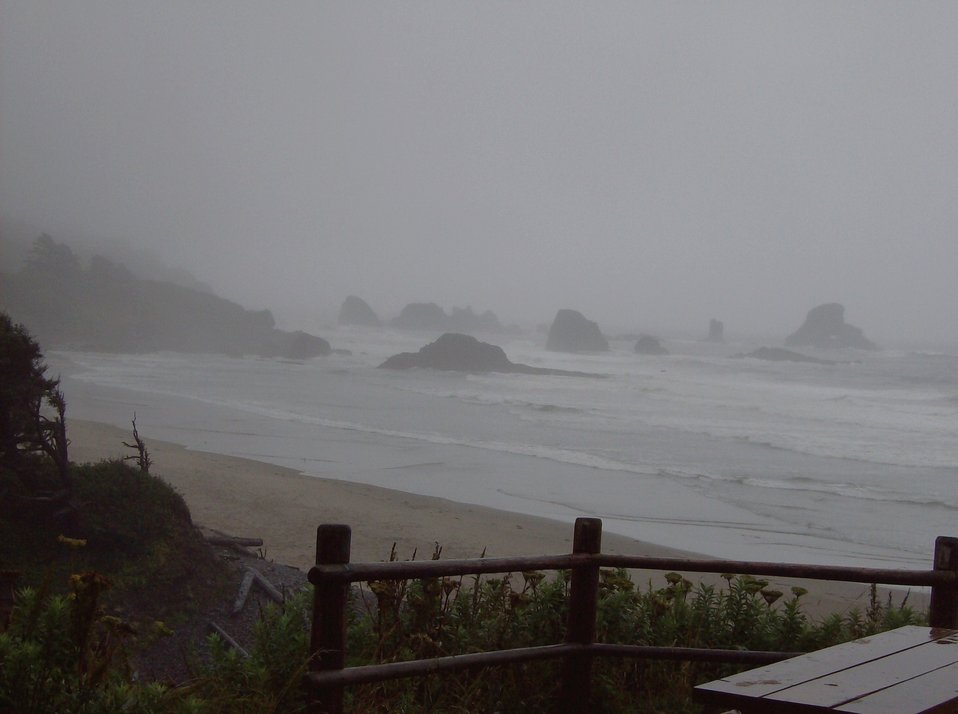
A lonely picnic table covered by mist and fog at Ecola State Park.